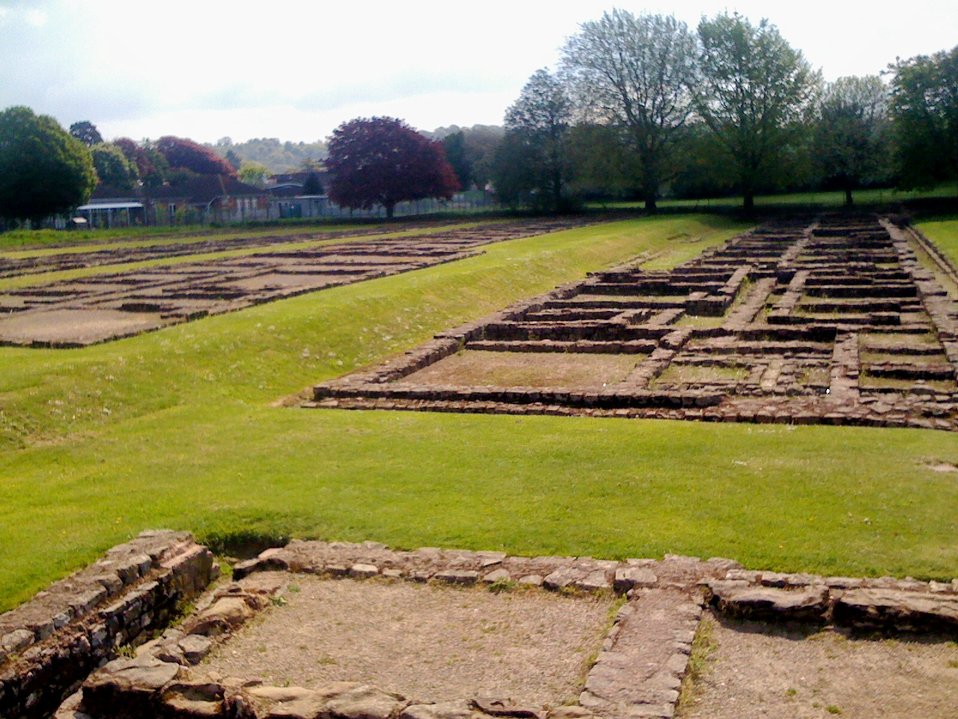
Prysg Field Barracks, Caerleon
Category:Pictures of Caerleon